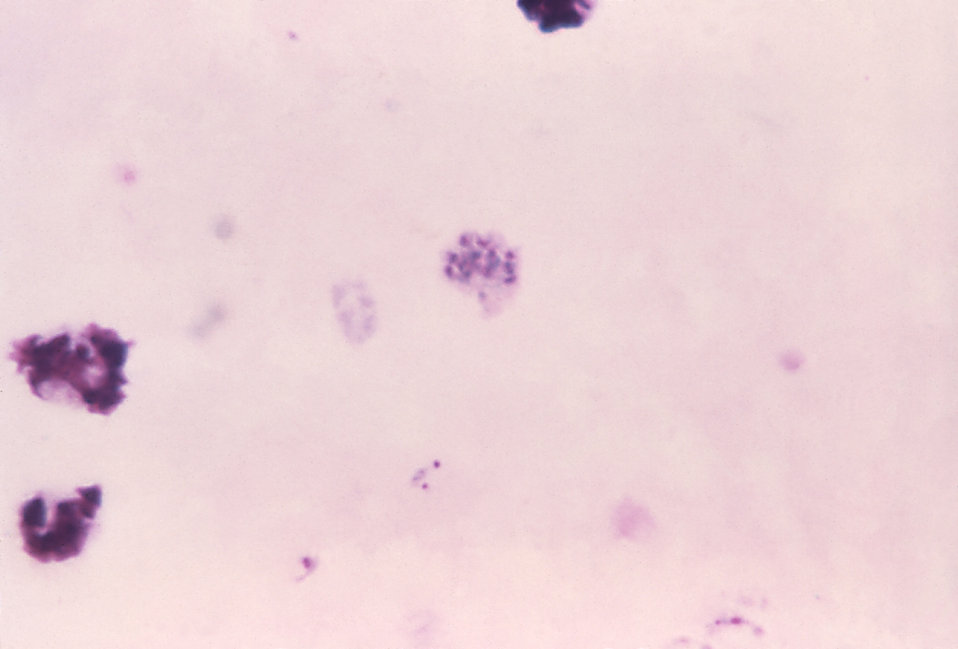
This thick film micrograph depicts a mature Plasmodium vivax schizont, using Giemsa stain; Mag. 1125X.